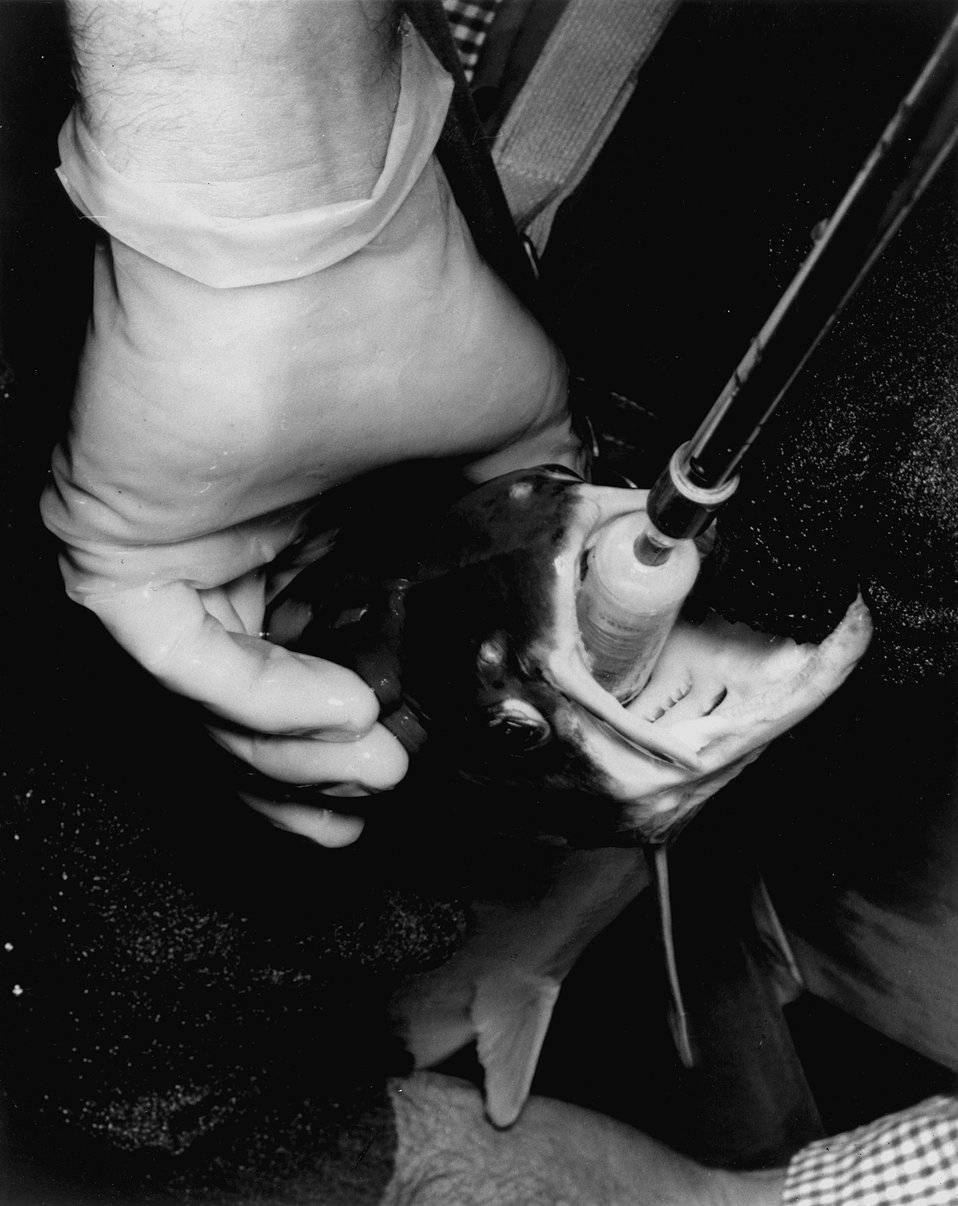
As part of studies to determine the effects of heated water discharges from reactors on migrating fish, the Pacific Northwest Laboratory and the Seattle Biological Laboratory of the U.S. Bureau of Commercial Fisheries have used sonic 'beepers' to track salmon and trout in the Columbia River near the coolant water discharge from the AEC's Hanford production reactors. c. 1971